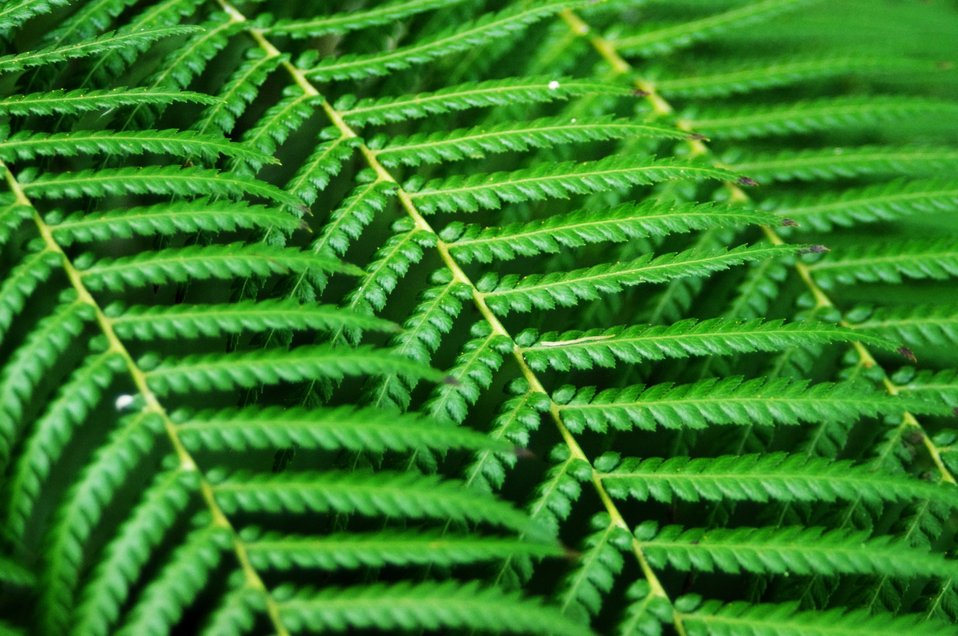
Fern abstract.